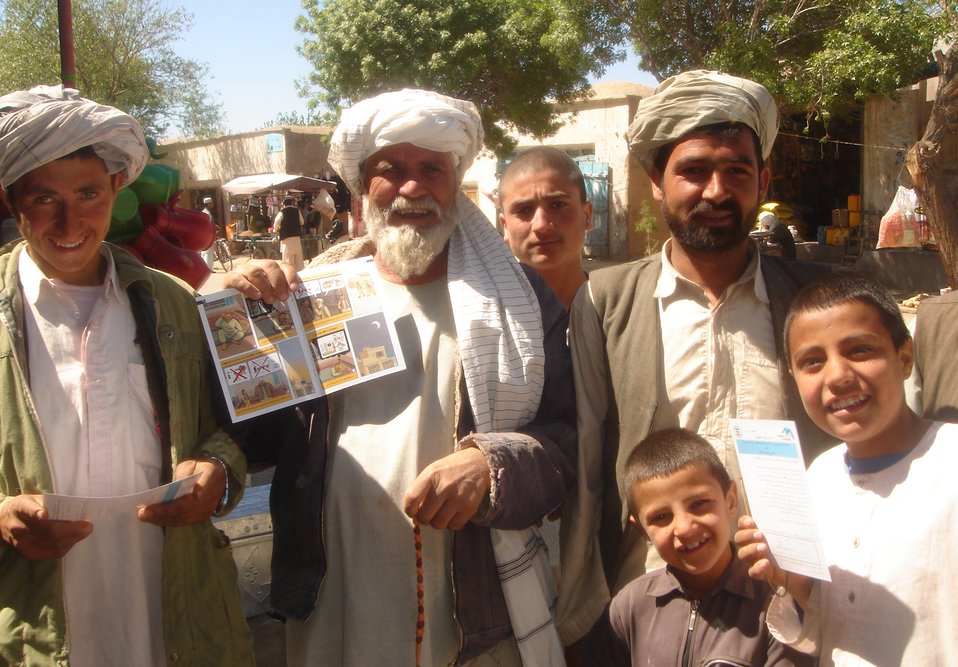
Formal justice system awareness campaign